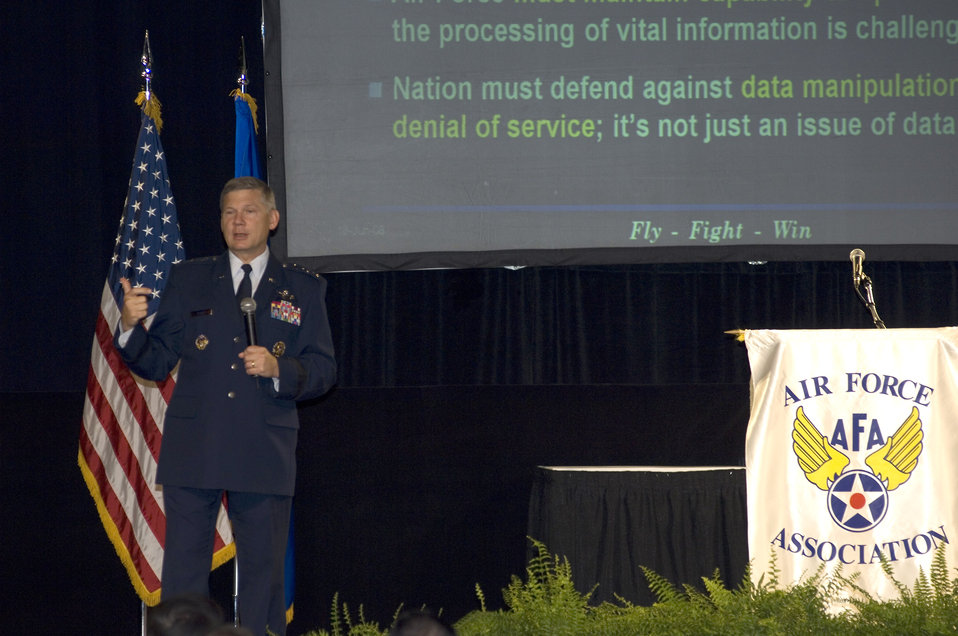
General Elder speaks at AF Cyberspace Symposium

Lt. Gen. Robert J. Elder addresses the Air Force's 2nd annual Cyberspace Symposium June 18 in Marlborough, Mass. General Elder is the commander of Eighth Air Force.